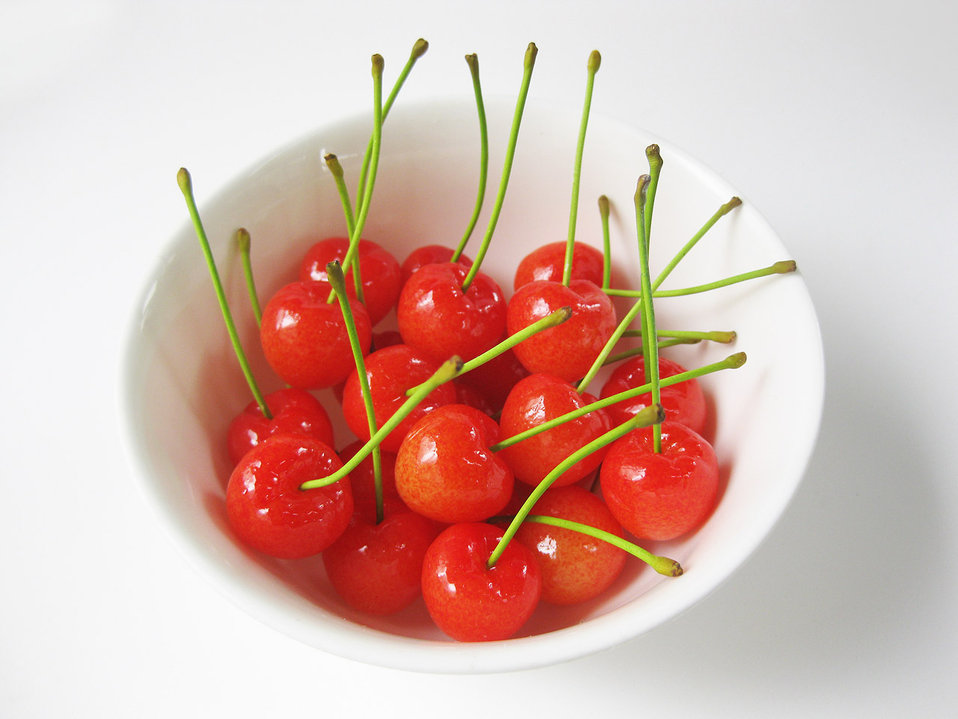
Sweet cherry cultivar 'satounishiki'.